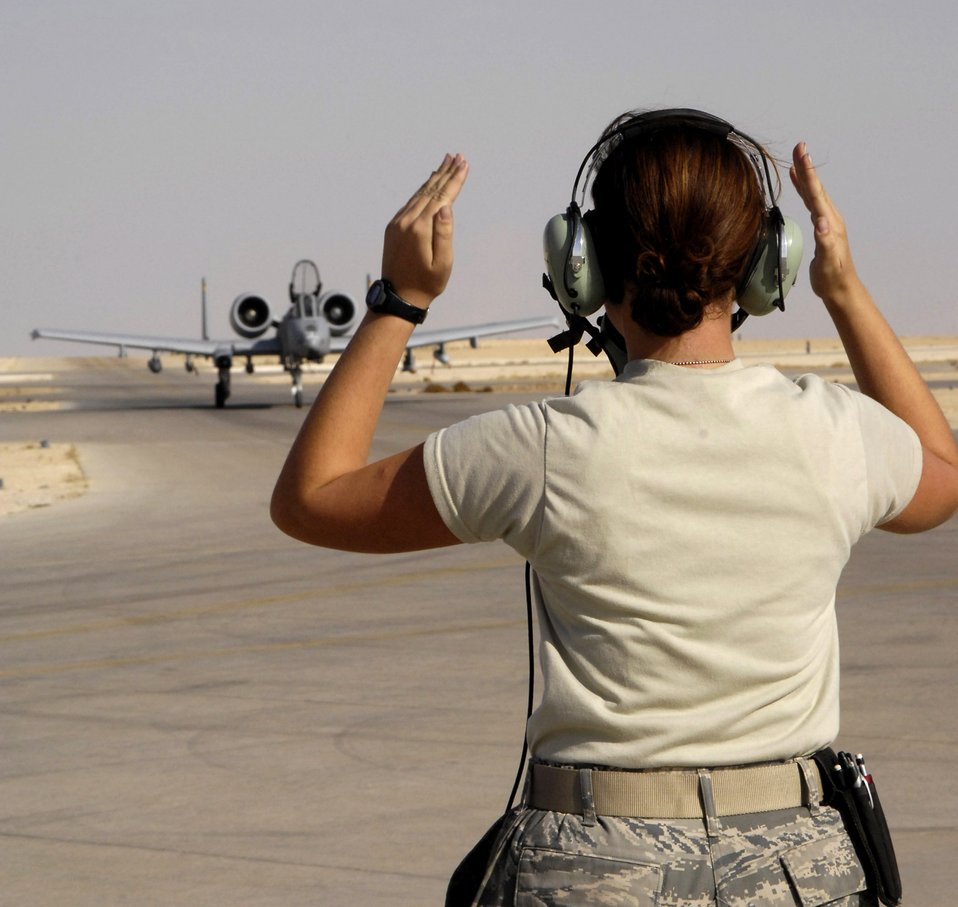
Upgraded A-10s prove worth in Iraq

Senior Airman Natalie Jones marshals in an A-10 Thunderbolt II after an Oct. 27 mission at Al Asad Air Base, Iraq. The A-10C's are assigned to the 104th Expeditionary Fighter Squadron made up primarily of the 175th Maryland Air National Guard. Airman Jones is a Maryland Air National Guard crew chief. The 104th EFS is the first unit to use the C-model A-10 in a combat zone. Its upgrades have made air power more efficient and have streamlined the close-air-support mission.